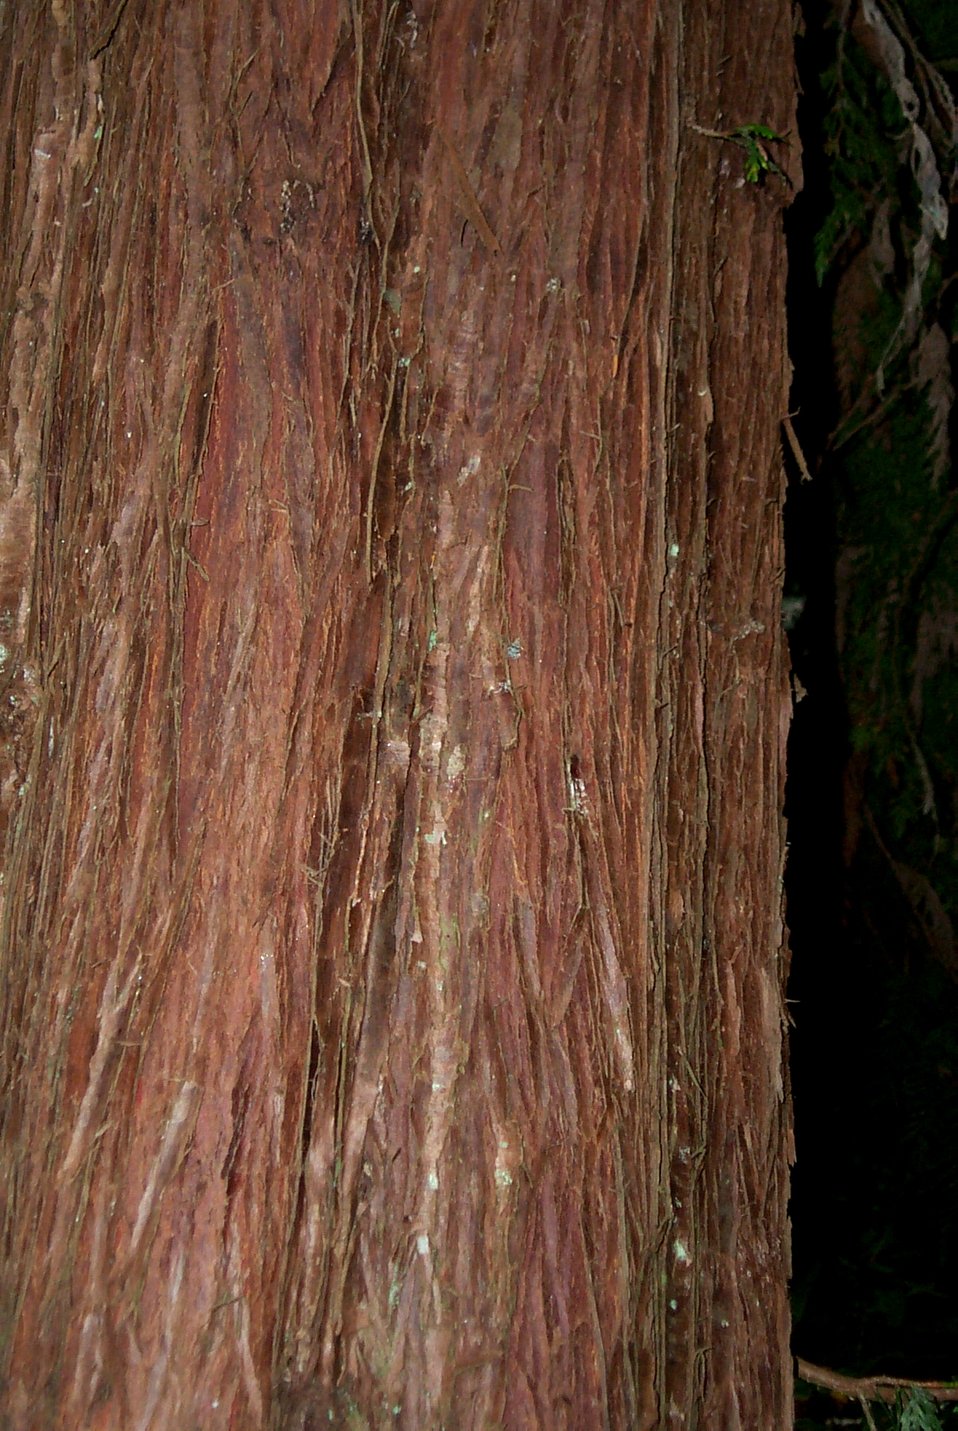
A mighty cedar at Fort Clatsop National Memorial on the Oregon coast.